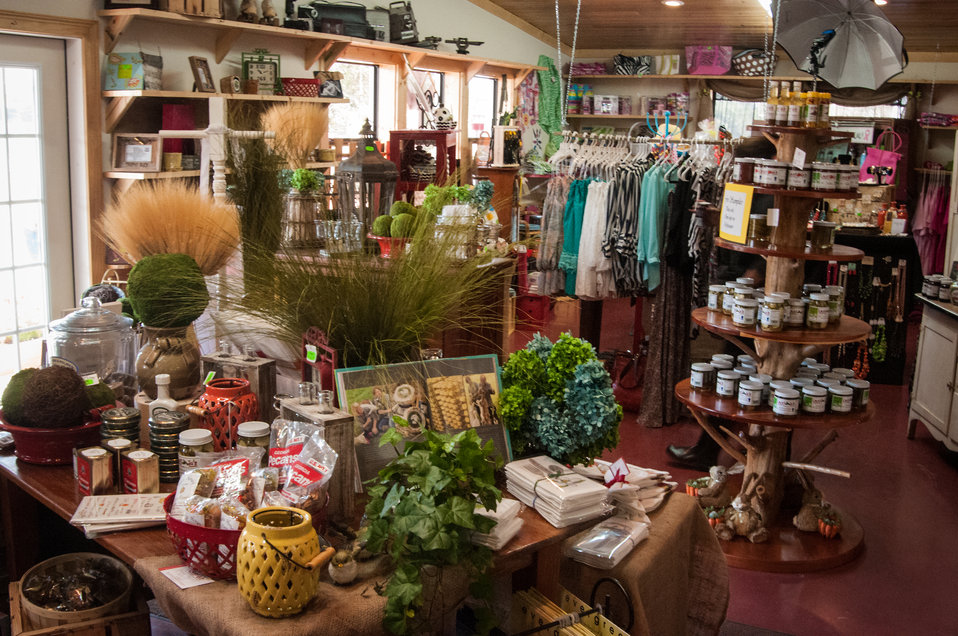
Laurie Jo’s Southern Style store sells a variety of merchandise along with her canned produce in Norman Park, Colquitt County, GA on Mar. 7, 2013. The canning business has increased its production to 12 items that now includes pickled green tomatoes, pickled okra, pickled asparagus pickled green beans, red and green pepper jellies, pineapple pepper jelly salsa and pepper sauce. Consumers may now purchase Lauri Jo’s Southern Style Canning Line in Whole Foods, Earth Fare and Kroger stores across 20 states. Lauri Jo Bennett applied for a U.S. Department of Agriculture (USDA) Rural Development (RD) Rural Business Enterprise Grant (RBEG) to help market her products. The grant from USDA has enable Lauri Jo to employ 26 people. The USDA Strike Force Initiative has designated Colquitt County, GA as a Strike Force county selected to receive assistance to relieve persistent poverty in historically high-poverty counties.